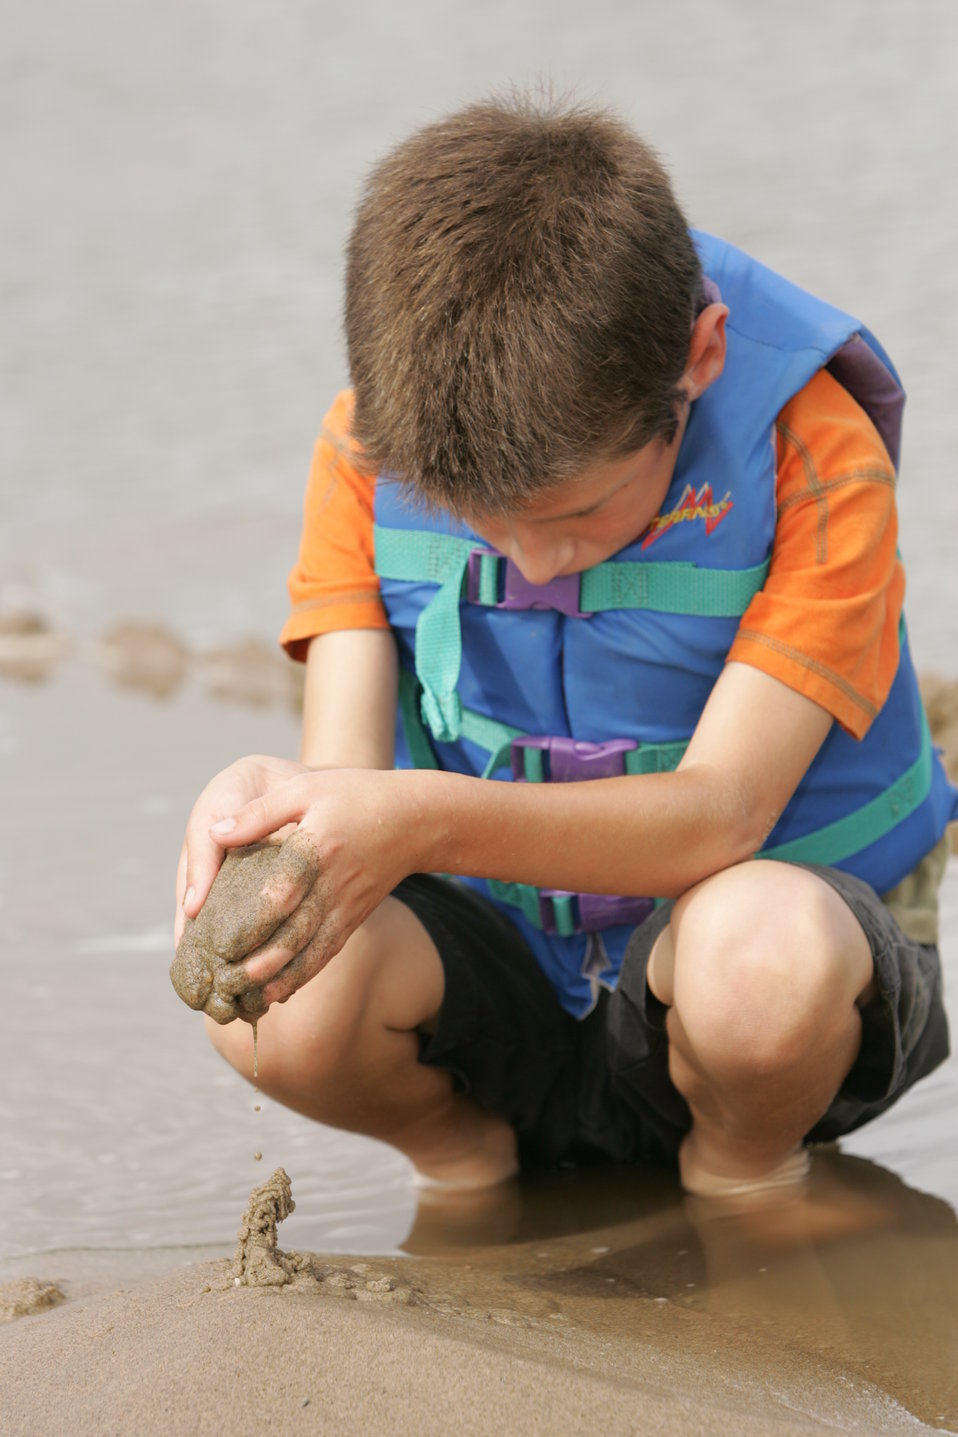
Beginnings of a castle.

Taking time to enjoy the summer day by the river.